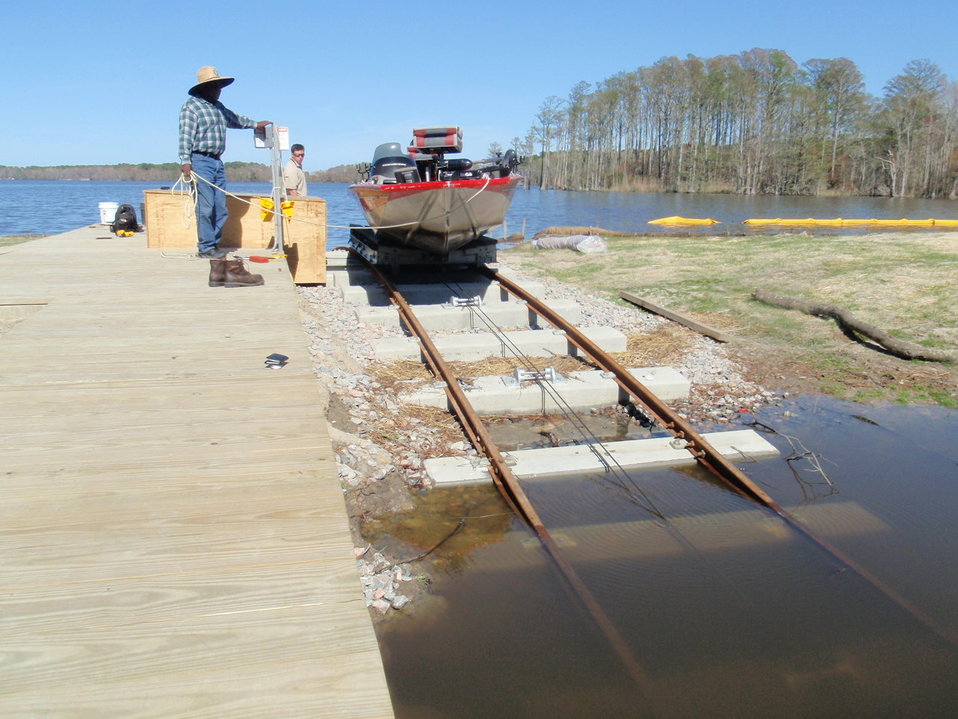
Boat portage mechanism at Lake Tecumseh

Photo of a fisherman using the boat portage mechanism to access Lake Tecumseh.